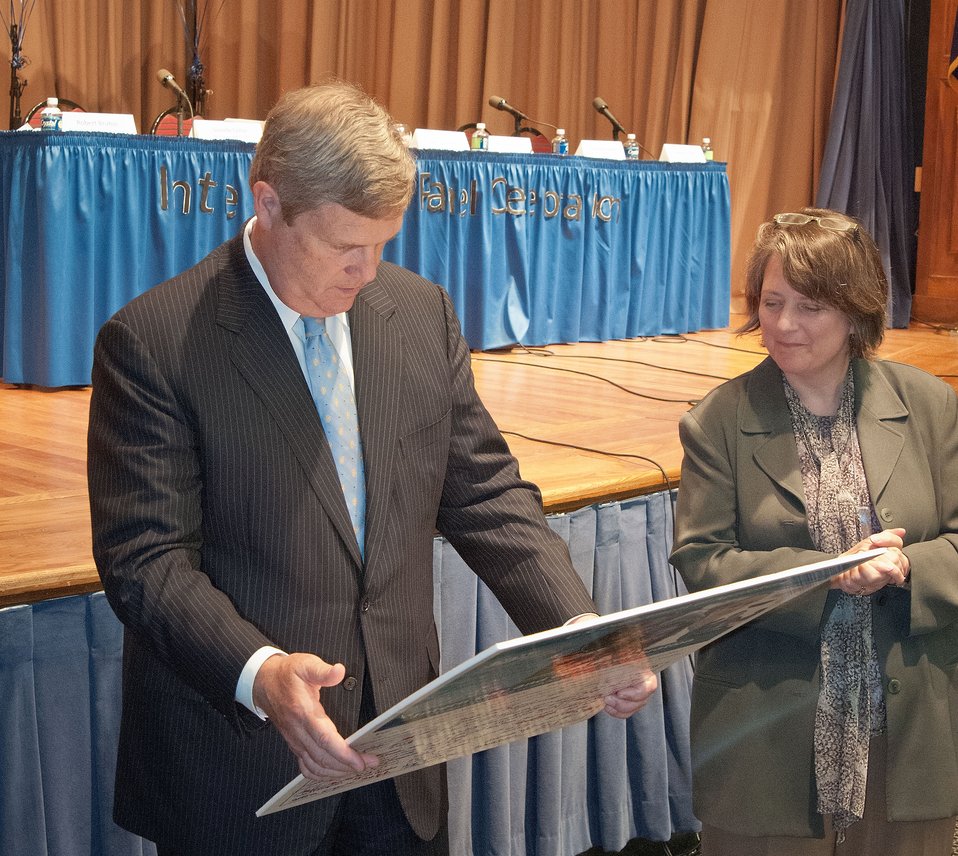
U.S. Department of Agriculture Secretary Tom Vilsack and Deputy Agriculture Secretary Dr. Kathleen Merrigan were each presented with a poster signed by interns at the United States Department of Agriculture during Intern Day and Panel Discussion, “Transforming USDA’S Tomorrow Today” in Washington, D.C., on Wednesday, July 11, 2012.